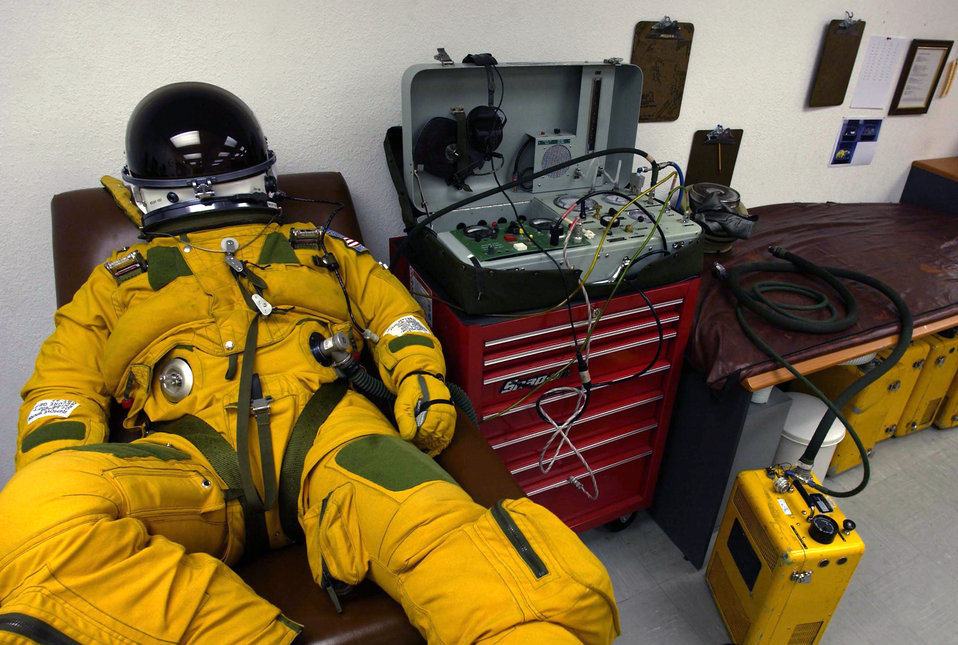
Taking a breather

SOUTHWEST ASIA -- Maj. Mark Mount relaxes while he breathes oxygen before his flight in a U-2 Dragon Lady at a forward deployed location. U-2 pilots must breathe pure oxygen for an hour prior to take off to reduce the amount of nitrogen in their blood stream. This astronaut-like flight suit is a requirement for the pilots because of the hazardous physiological regime of high altitude flying.